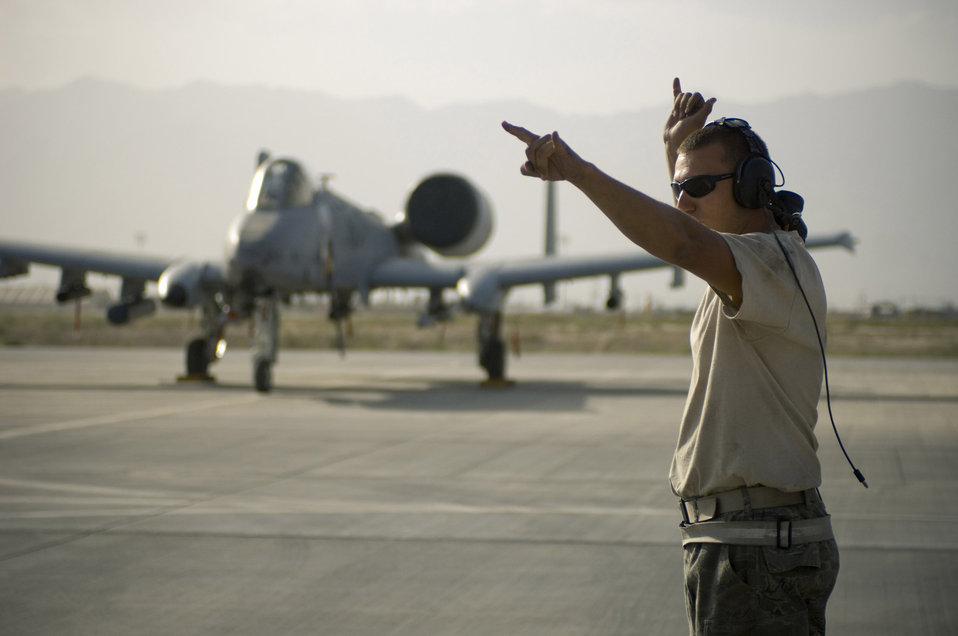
Willow Grove unit completes last A-10 deployment

Staff Sgt. Kevin Bliem marshals out an A-10 Thunderbolt II Sept. 12 at Bagram Air Field, Afghanistan. Sergeant Riem is a 455th Expeditionary Aircraft Maintenance Squadron crew chief.